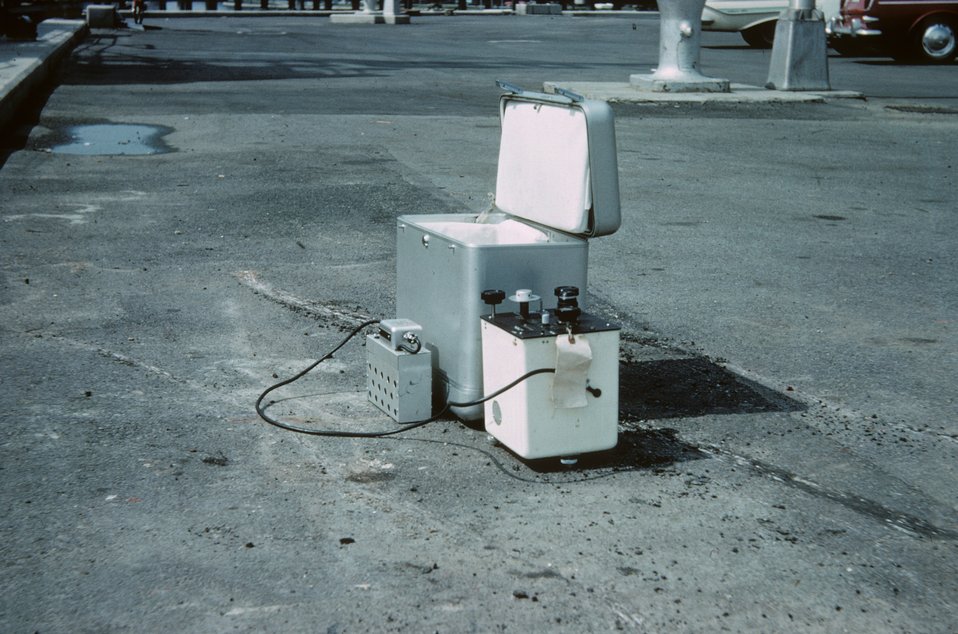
Lacoste and Romberg Gravity Meter